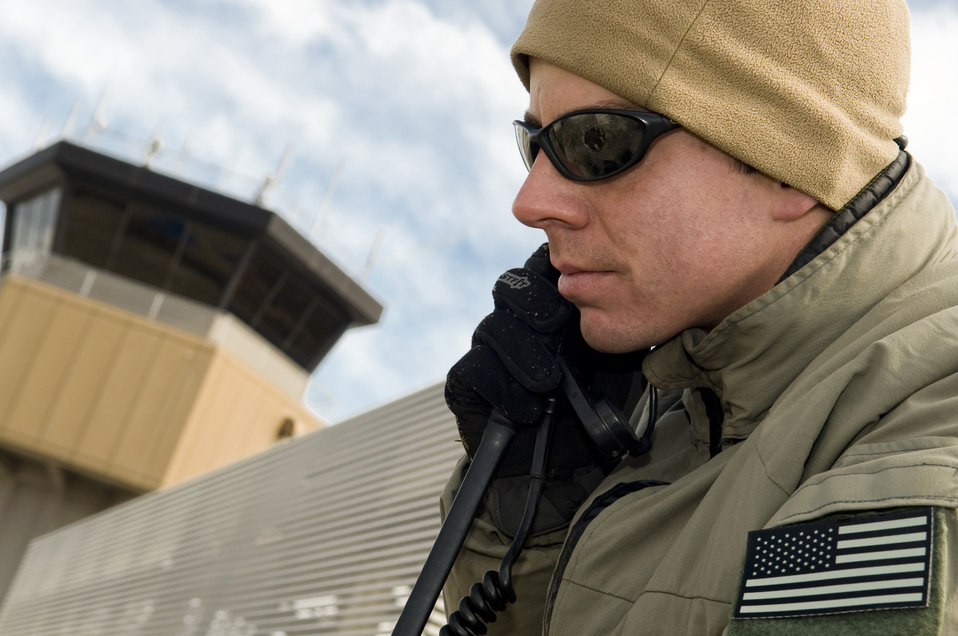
Airmen work with Japanese air controllers

Staff Sgt. James Graham works with Japanese air traffic controllers March 26, 2011, to land aircraft at Sendai Airport, Japan. Sergeant Graham is assigned to the 320th Special Tactics Squadron at Kadena Air Base, Japan.